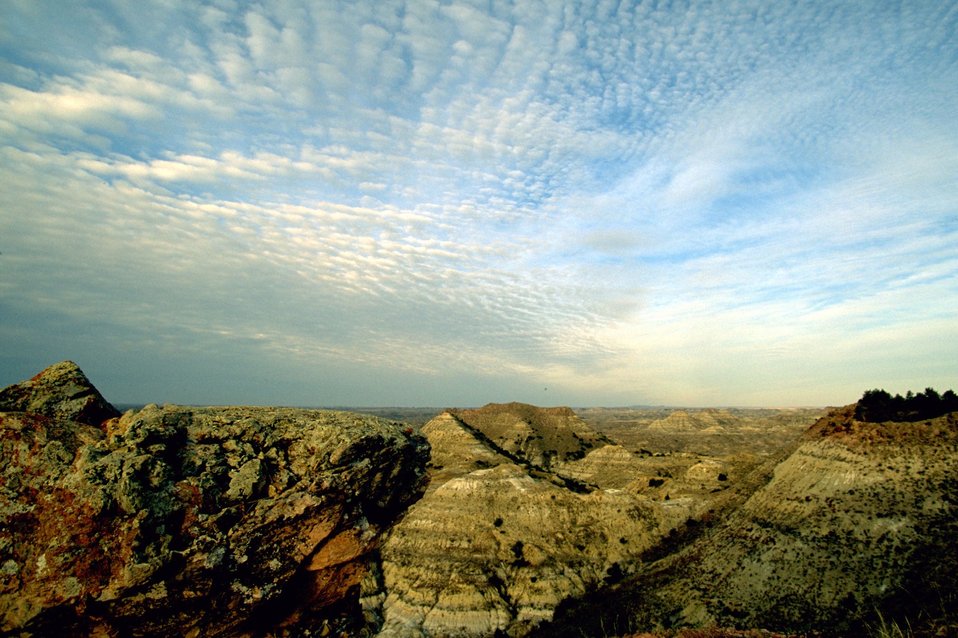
Unusual cloud formations over the Terry Badlands